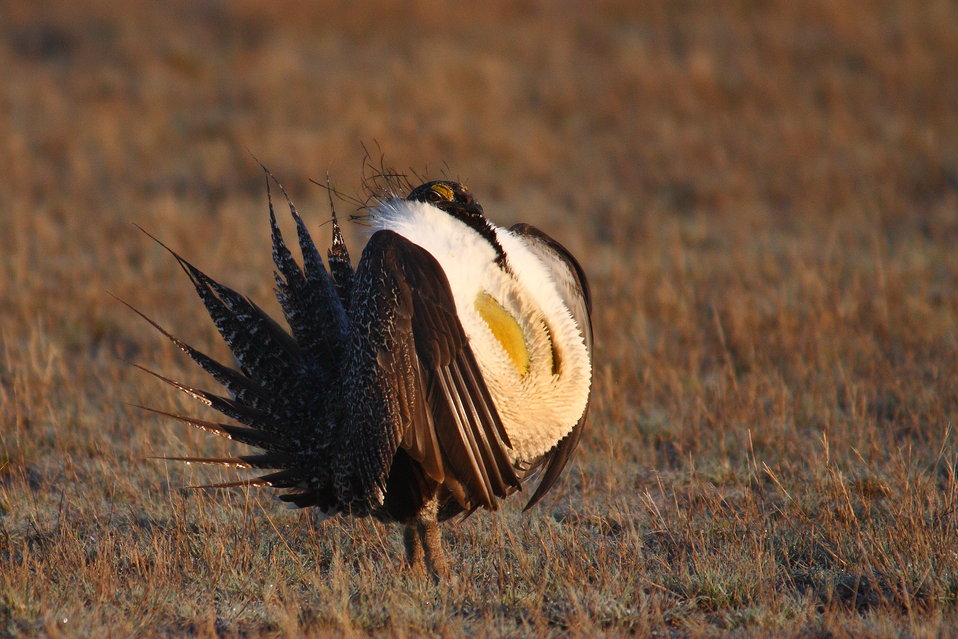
Greater Sage-Grouse

Male sage-grouse on a lek in Butte County, South Dakota.

Credit: Steve Fairbairn / USFWS

Photo Contest Entry #117